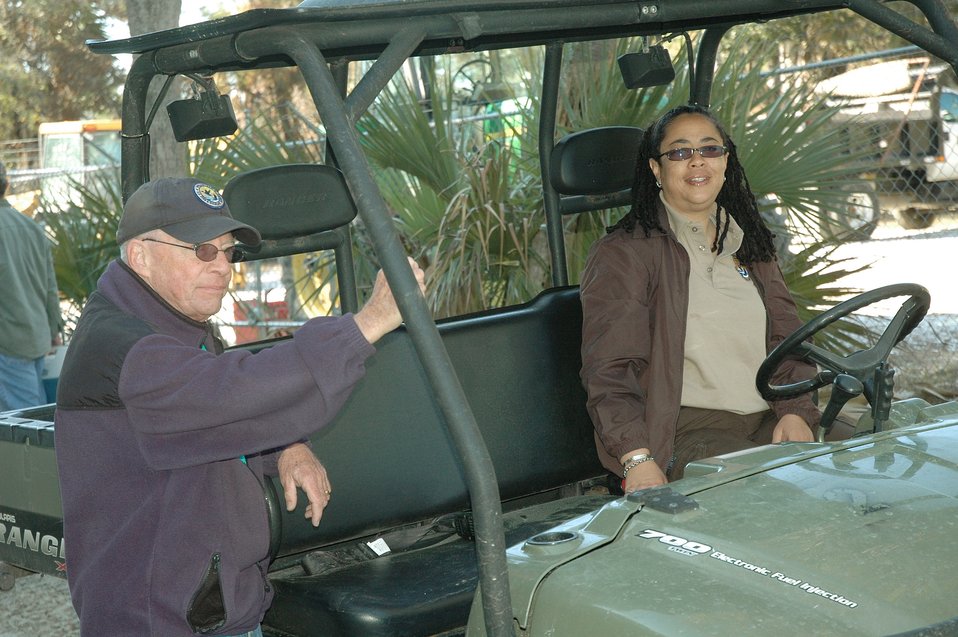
Shelley Stiaes and open house

Shelley Stiaes conducts an open house at St. Vincent National Wildlife Refuge in Florida, where she is the refuge manager. (USFWS)